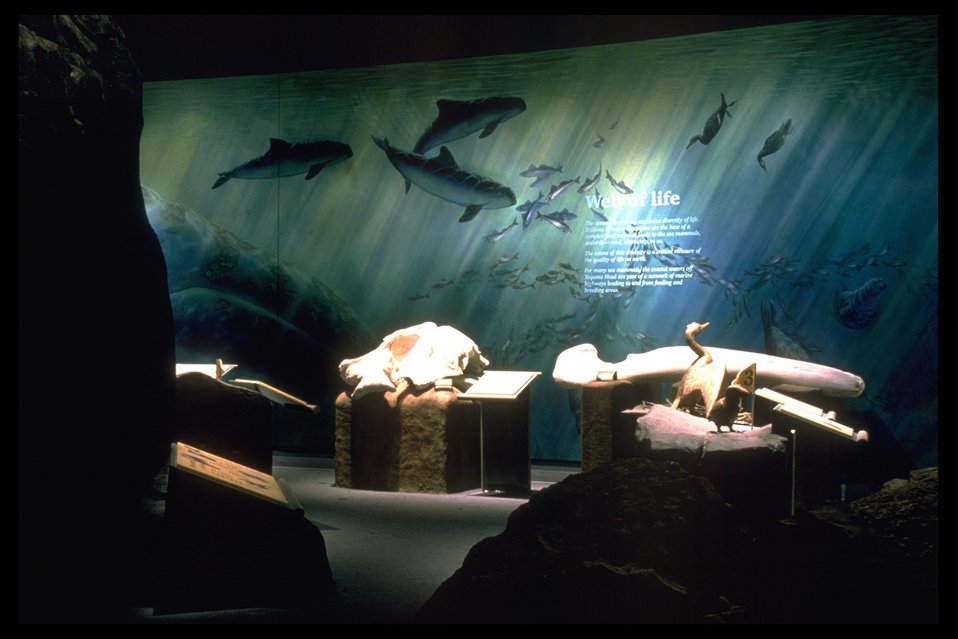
Dock interpretive display in the center of the Yaquina Head lighthouse.